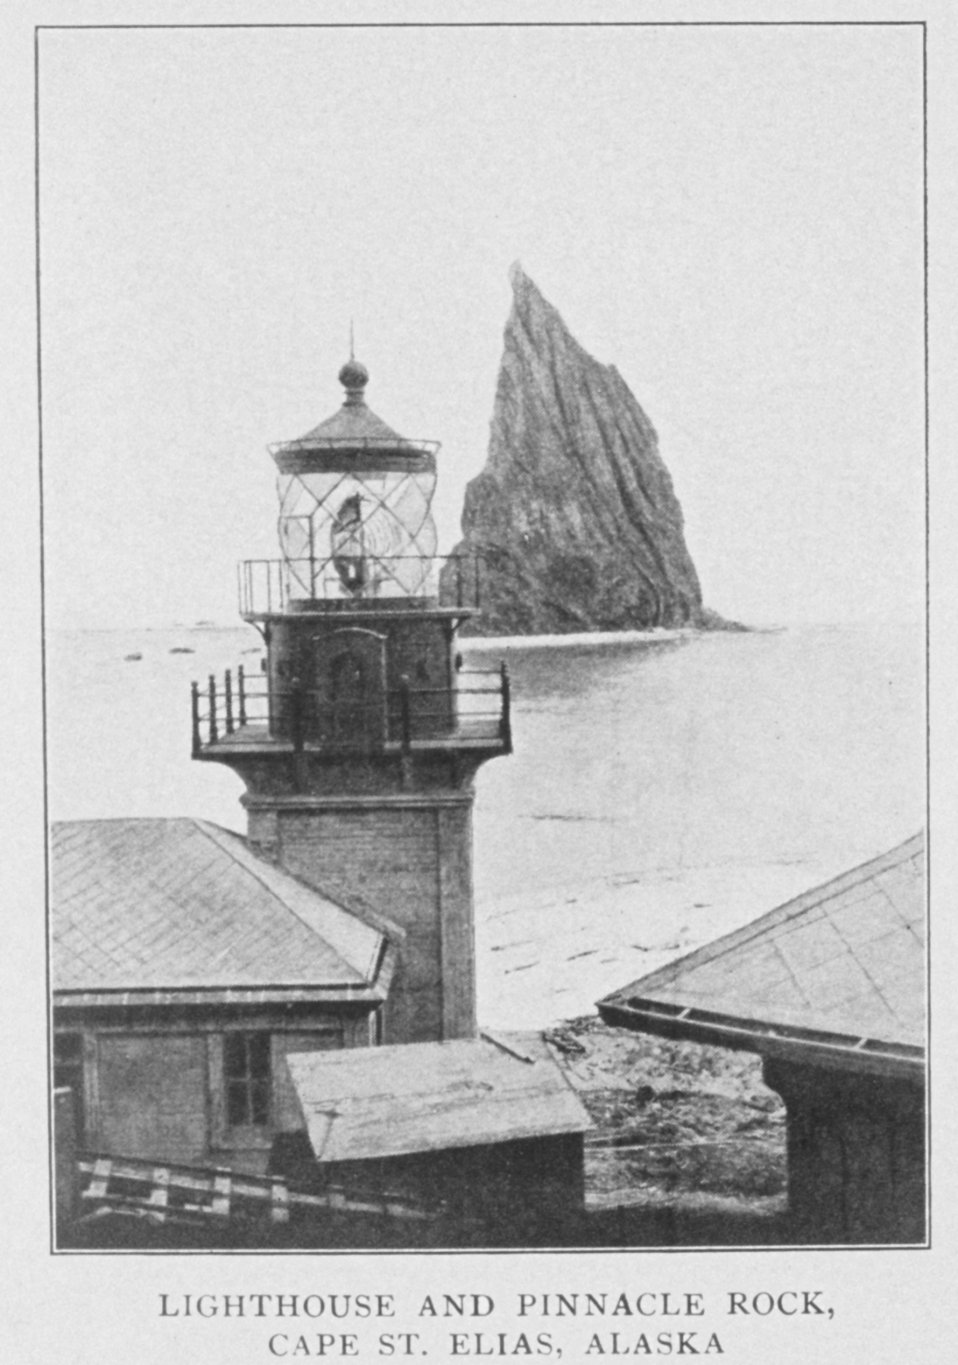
Lighthouse and Pinnacle Rock, Cape St. Elias, Alaska. In: 'Lighthouses and Lightships of the United States' by George R. Putnam, p. 148, 1917. Houghton Mifflin and Company, Boston.Library Call No. 527.7 P98.